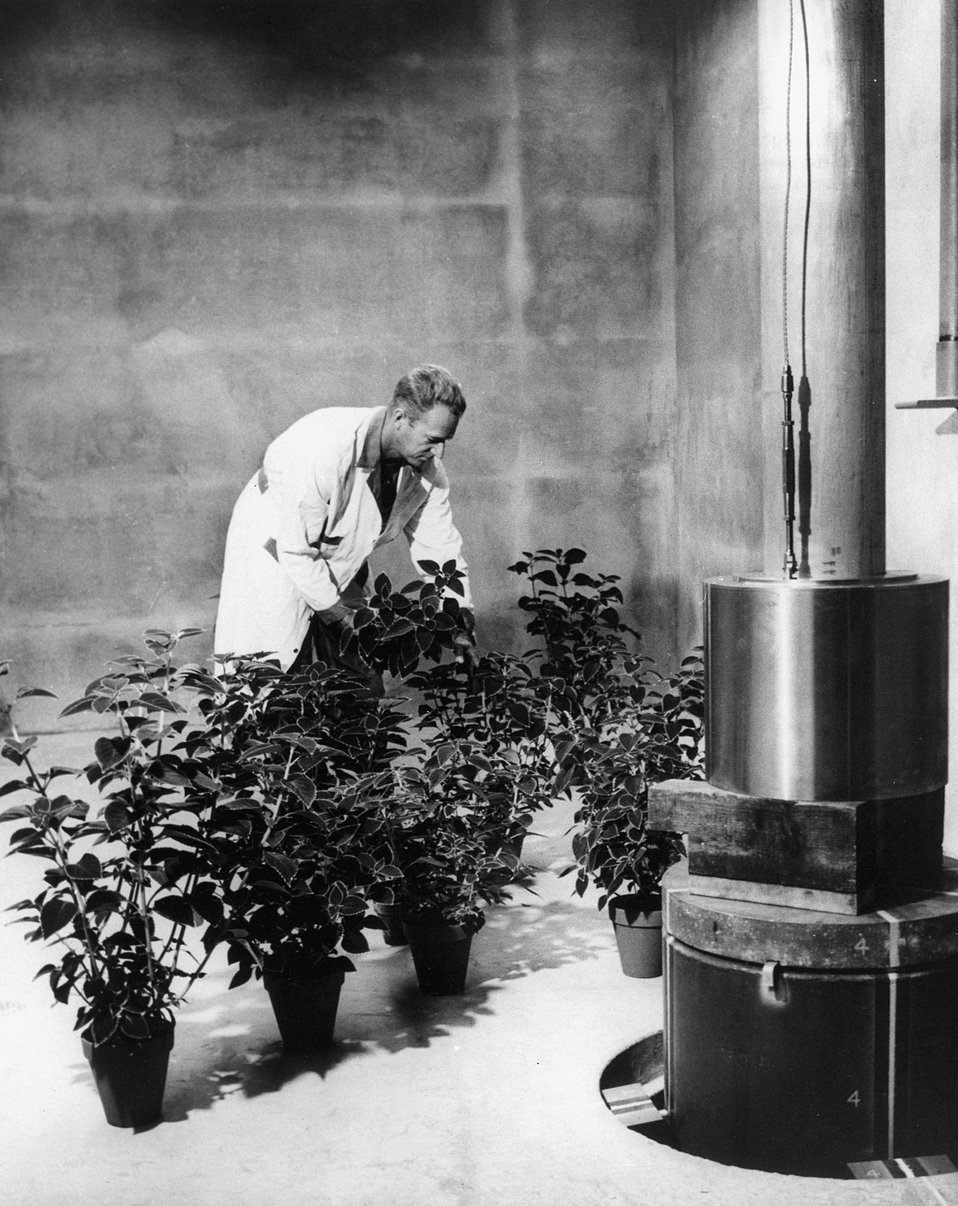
Photo shows biologist arranging plants around one of the sources in the radiation area in the basement of the new Controlled Environment Facility for Radiobotany at Brookhaven National Laboratory. c. 1966